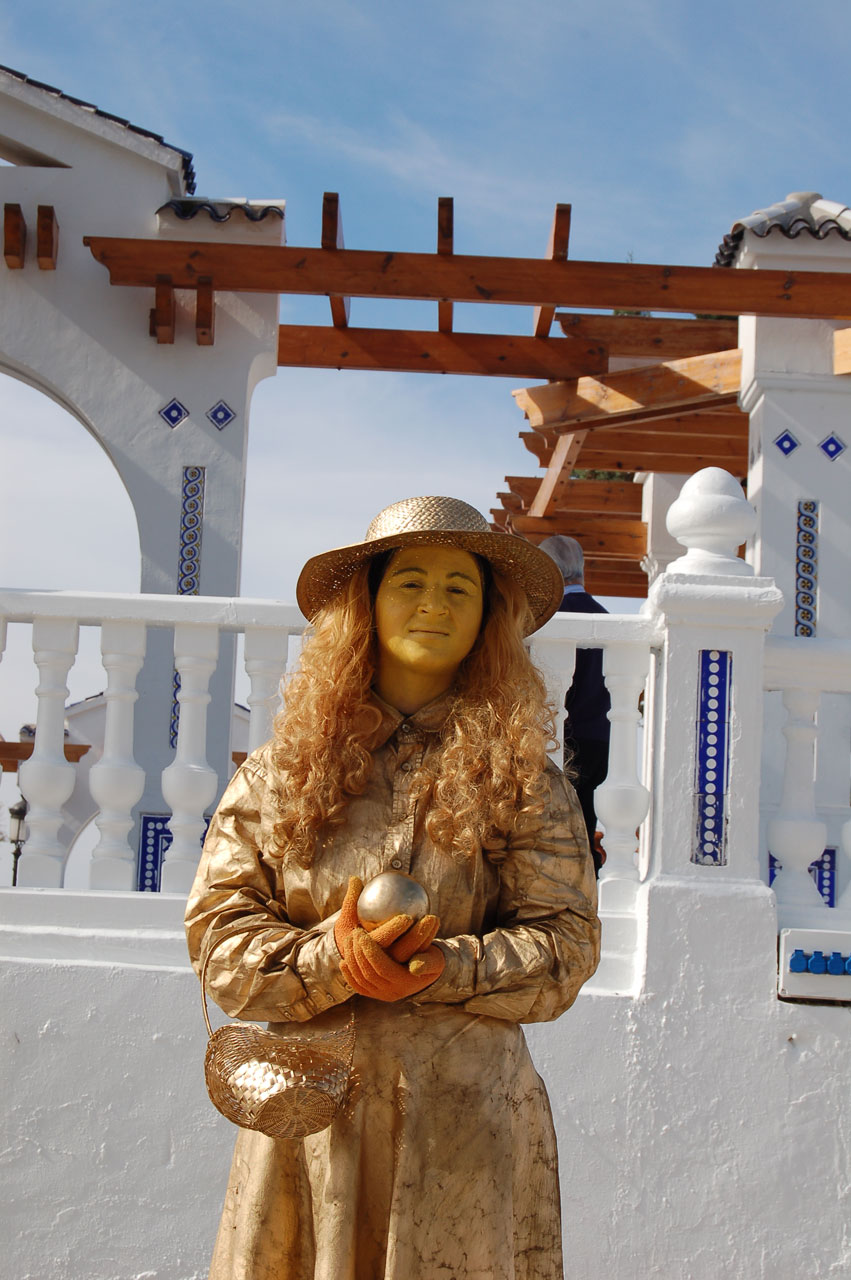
Mime

Hard life.